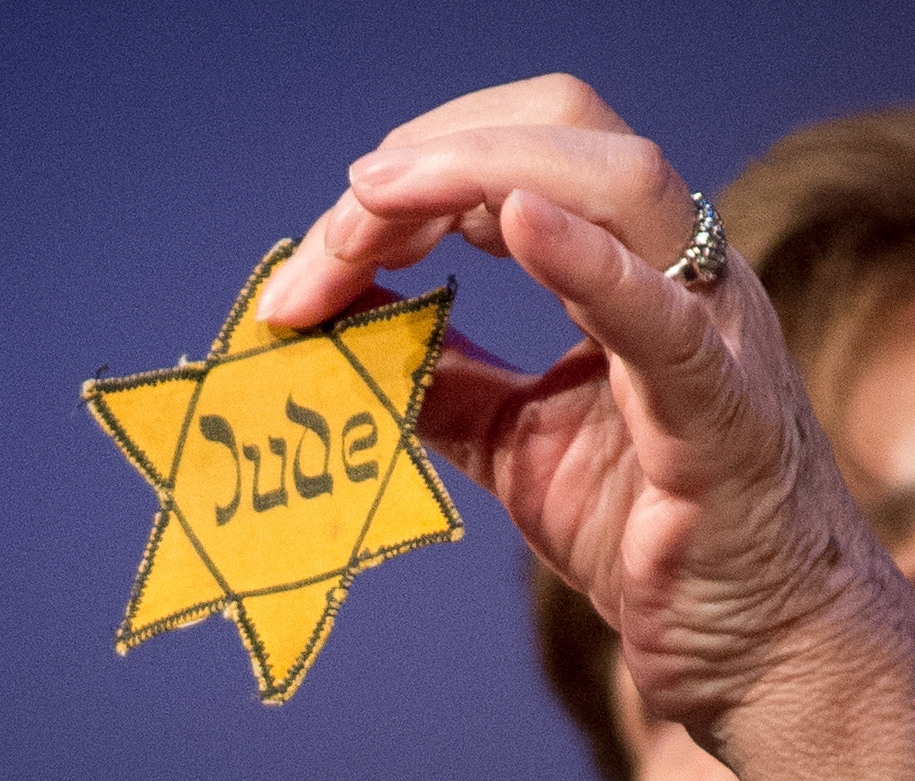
Theresienstadt Concentration Camp Czech Jewish Holocaust Survivor Ela Stein-Weissberger spoke during the 2013 Federal Inter-Agency Holocaust Remembrance Day, at the Lincoln Theater, on Wednesday, April 17, 2013, in Washington, D.C. Ms. Stein-Weissberger talks about her experience of ‘The Night of Broken Glass’, when the Nazi smashed the Stein home. During her imprisonment at Theresienstadt Concentration Camp, she took part in a children’s play ‘Brundibar’ that was part of a German SS propaganda film that showed model camp conditions and activities. The film was never released by the German government, but did survive since then. She was shown in the cast, when it was used in the CBS News program – 60 Minutes – ‘The Nazi Deception.’ She also displayed her cloth ‘Jude’ badge that identified her as being Jewish during the Nazi uprising. Since the 1979 President’s Commission on the Holocaust, an annual proclamation signed by the President of the United States recognizes the importance of remembering the atrocities of the Holocaust that should never be forgotten or be ignored.